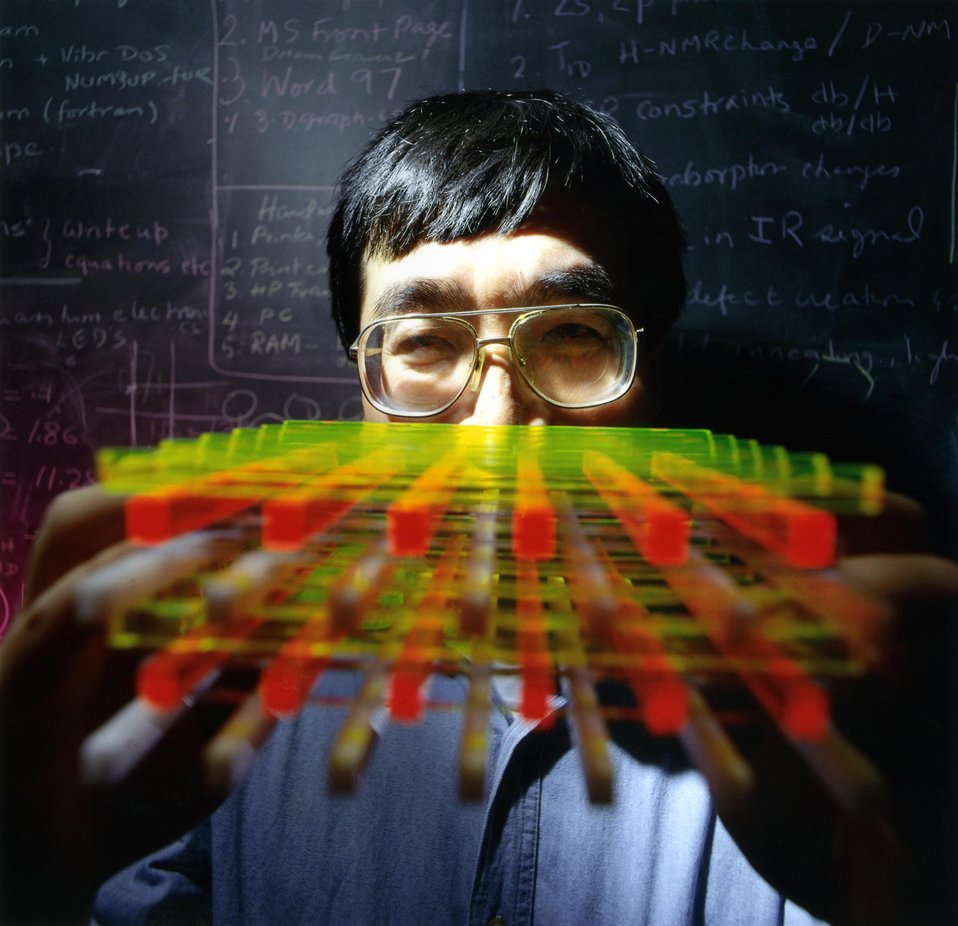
PLEXIGLASS MODEL OF LAYERED LATTICE DESIGN FOR THREE-DIMENSIONAL PHOTONIC BANDGAP CRYSTALS.

PHOTONIC CRYSTALS DO NOT OCCUR NATURALLY, THEY MUST BE MADE. AMES SCIENTISTS ARE PURSUING THIS TASK BY MANIPULATING PHOTONS TO CONTROL ELECTROMAGNETIC RADIATION FOR POTENTIAL APPLICATIONS THAT INCLUDE OPTICAL SWITCHES, MICRO-FABRICATED LASERS, WAVEGUIDES, LIGHT EMITTING DIODES AND TELECOMMUNICATIONS.